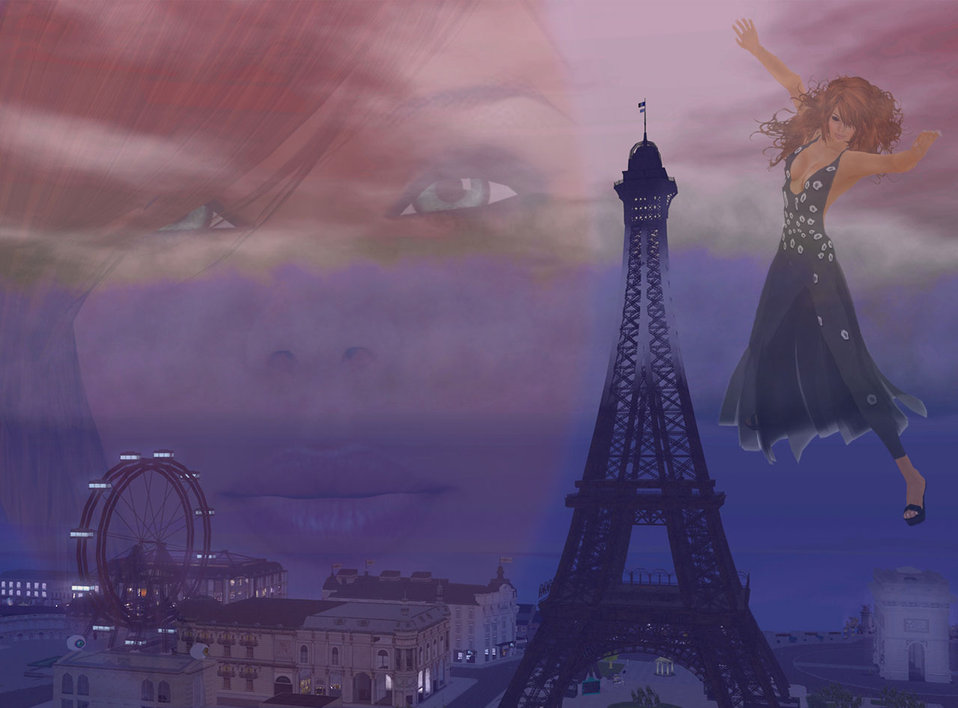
Paris dreams

Second life avatar and eiffel tower construction.